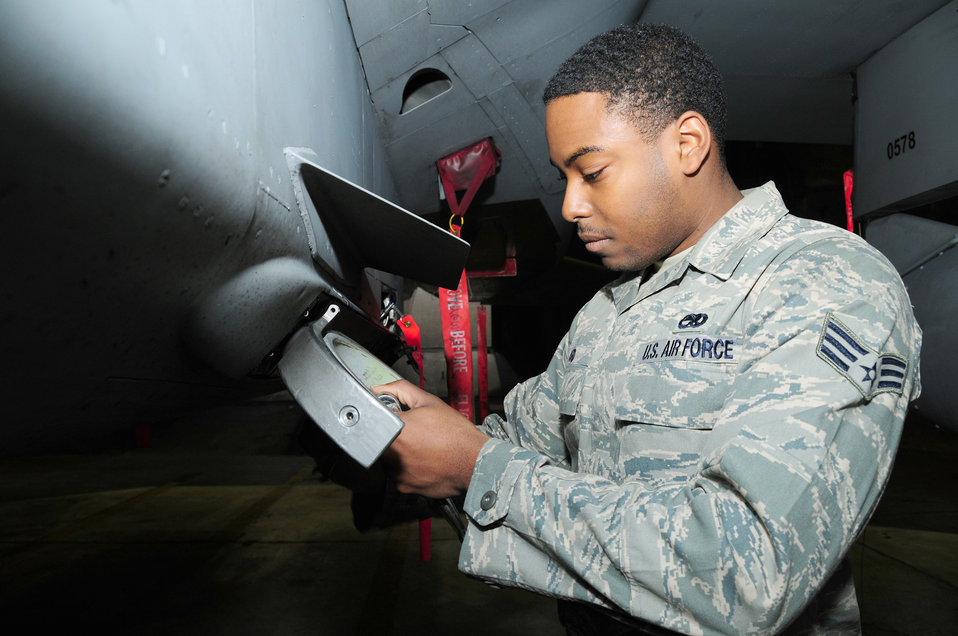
Icelandic Air Policing Mission

Senior Airman Jonathan Ard removes an unserviceable adapter from an F-15C Eagle Sept. 23, 2010, at Keflavik, Iceland. Airman Ard is deployed from the 748th Aircraft Maintenance Squadron at Royal Air Force Lakenheath, England.